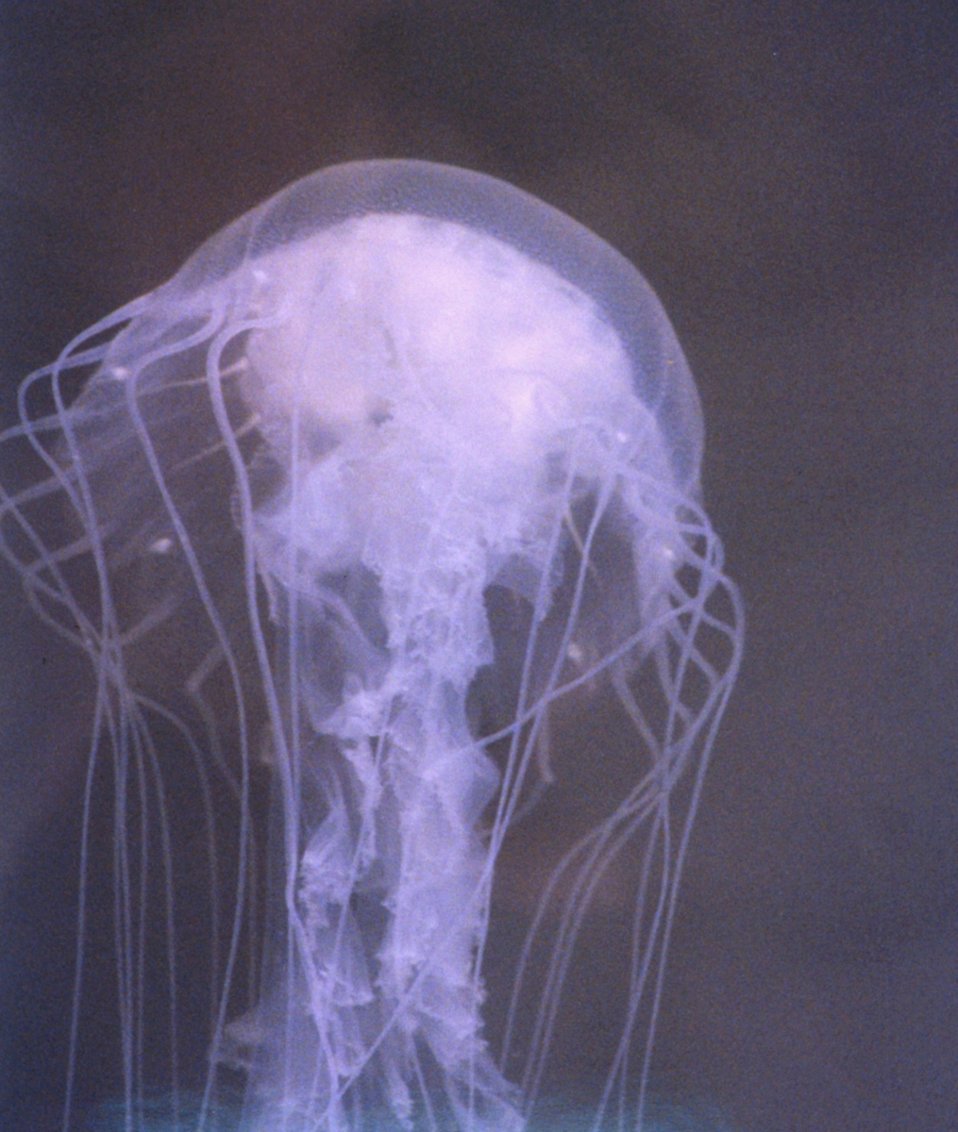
The bane of Chesapeake Bay swimmers, the stinging sea nettle, Chrysaora quiquecirrha.